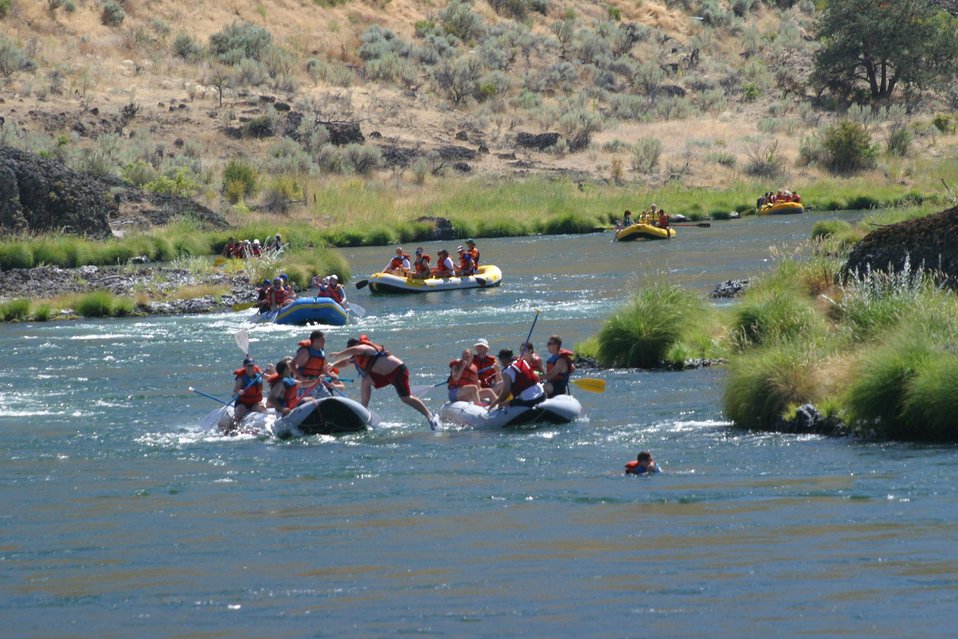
Looking up stream from the Sandy Beach take out.